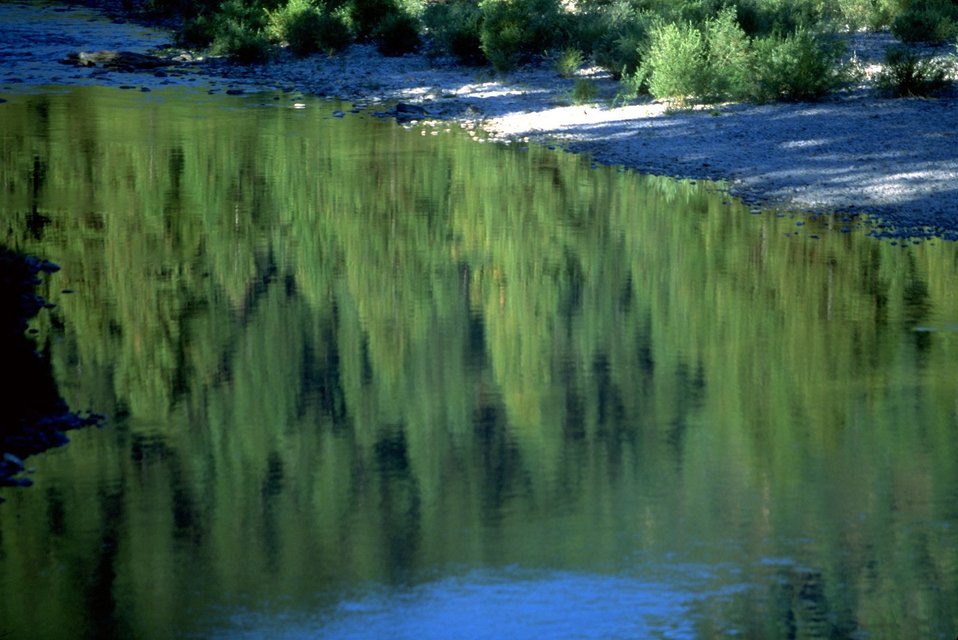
Pine trees/forest reflection in Blackfoot River